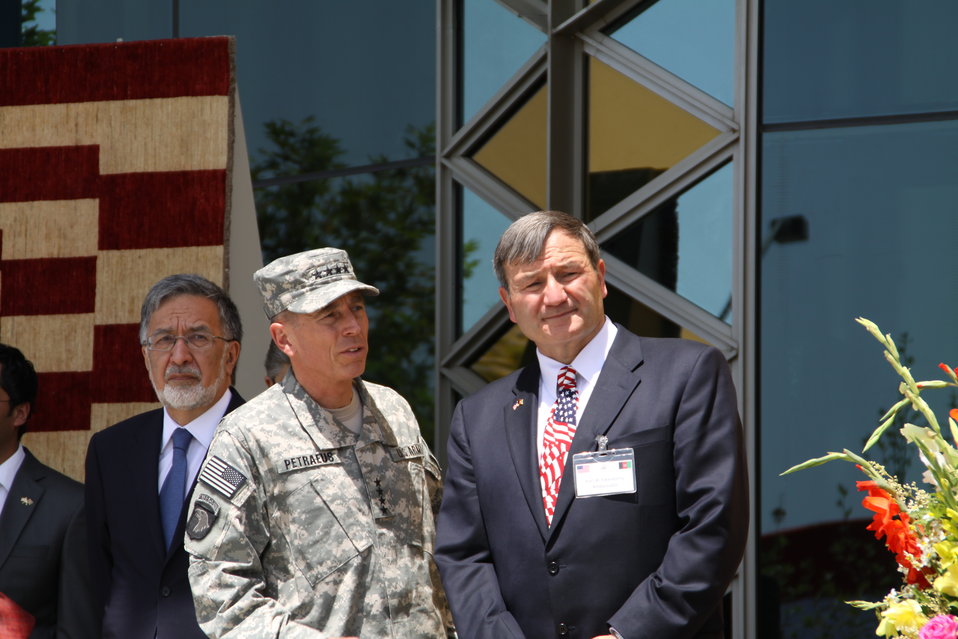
Kabul Official July 4th Celebration